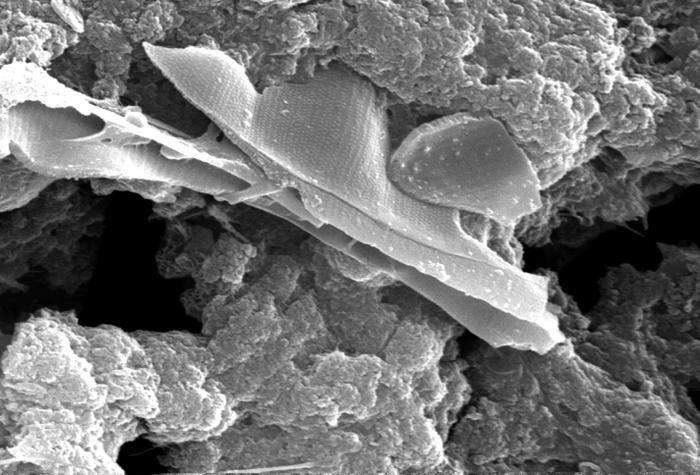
This scanning electron micrograph (SEM) of an untreated water specimen extracted from a wild stream mainly used to control flooding during inclement weather, revealed the presence of unidentified organisms, which included bacteria, protozoa, and algae. In this particular image, unidentified sheets of algae were wrapped in a mass of what appeared to be a mucoid amorphous biofilm. See PHIL 11713 for a colorized version of this image.